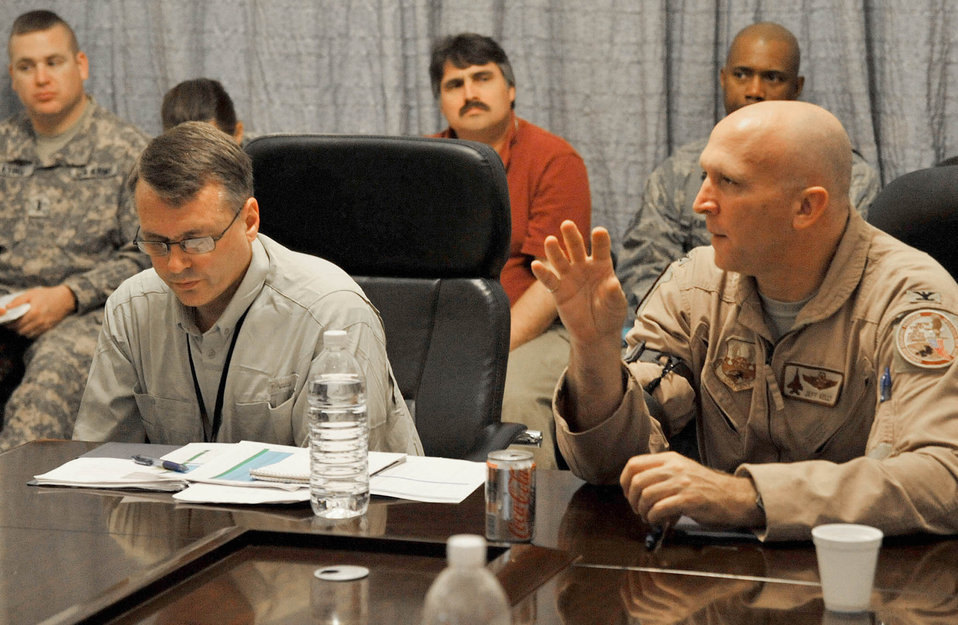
Air Force leaders discuss future of Airmen in joint operations across Iraq

Col. Jeffrey Kelly, from U.S. Air Forces Central, discusses a manpower issue directly with a roomful of U.S. Army and Air Force leaders, March 22, 2011, at Victory Base Complex, Iraq. USAFCENT officials plan to hold a similar conference each quarter.